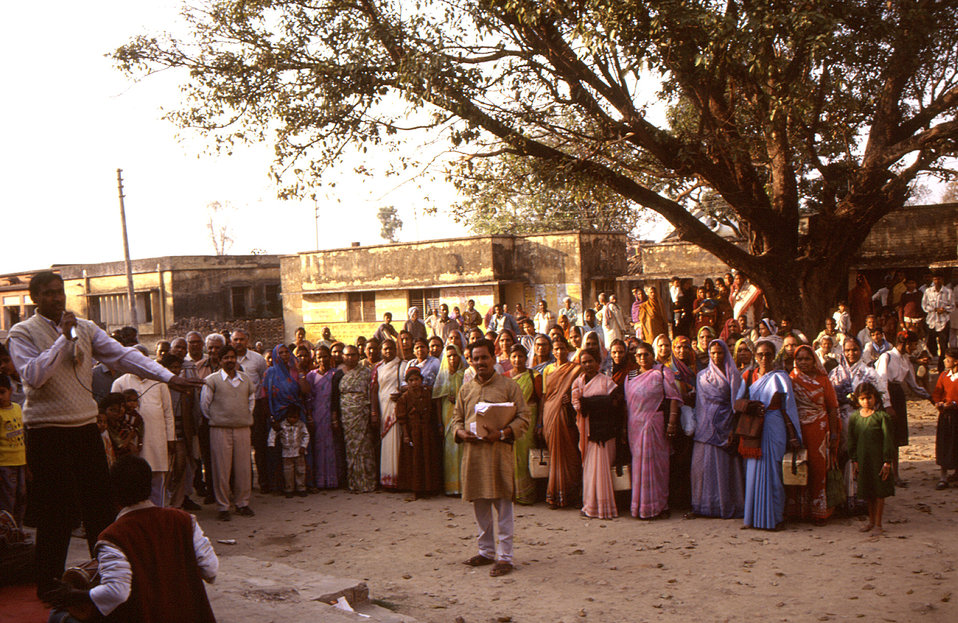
This 2000 photograph depicted a gathering of both health care practitioners, as well as the general public, who'd come together at a rally in the Indian state of Uttar Pradesh, which was held to promote the country's polio immunization efforts. The Indian health care workers involved in the campaign are to the left, standing near the tree. The image was provided by Chris Zahniser, B.S.N., R.N., M.P.H., a Stop Transmission of Polio (STOP) team member and photographer, who was assigned to the state of Uttar Pradesh in northern India, and spent three months working in the Districts of Gorakhpur and Deoria.